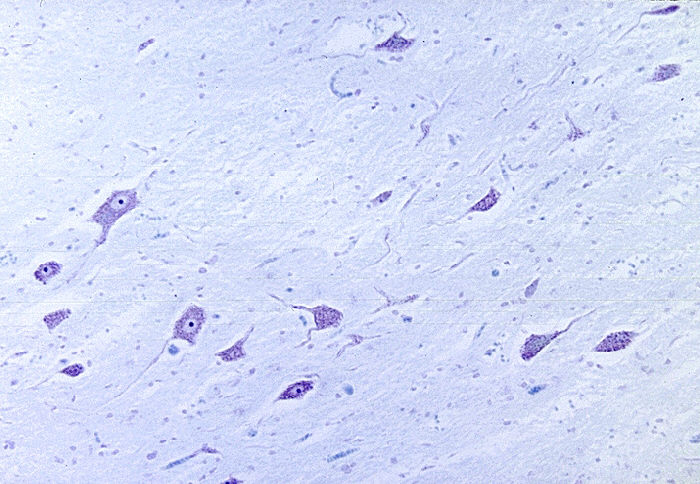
Histology of normal anterior horn neurons of cervical spinal cord.